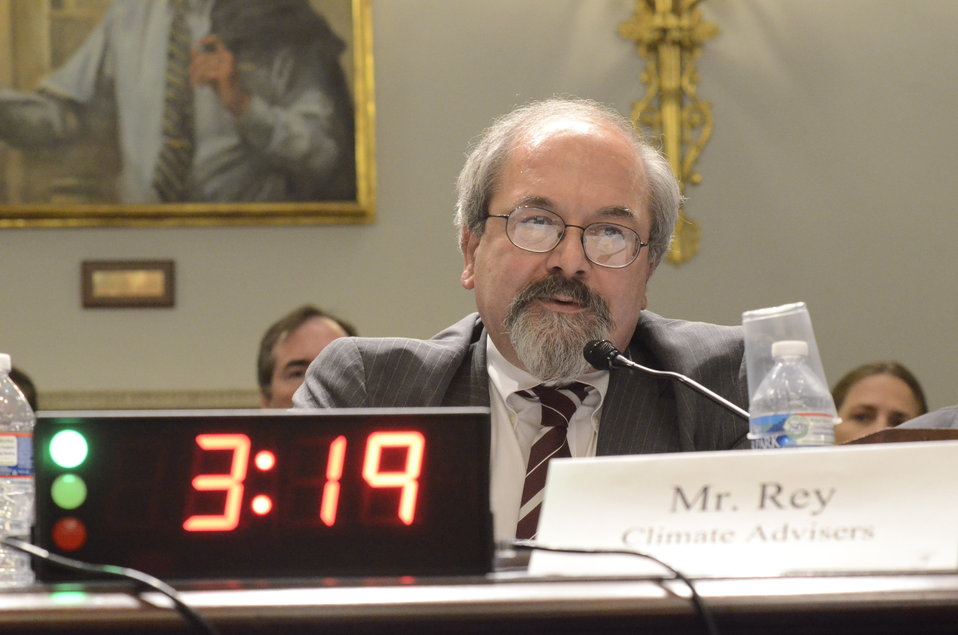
Climate Adviser and former Agriculture Undersecretary for Natural Resources and Environment Mark Rey testifies on Retailers & Entertainers Lacey Implementation & Enforcement Fairness Act & Freedom from Over-Criminalization & Unjust Seizures Act at the Longworth House Office Building in Washington, D.C. on Tuesday, May 8, 2012.